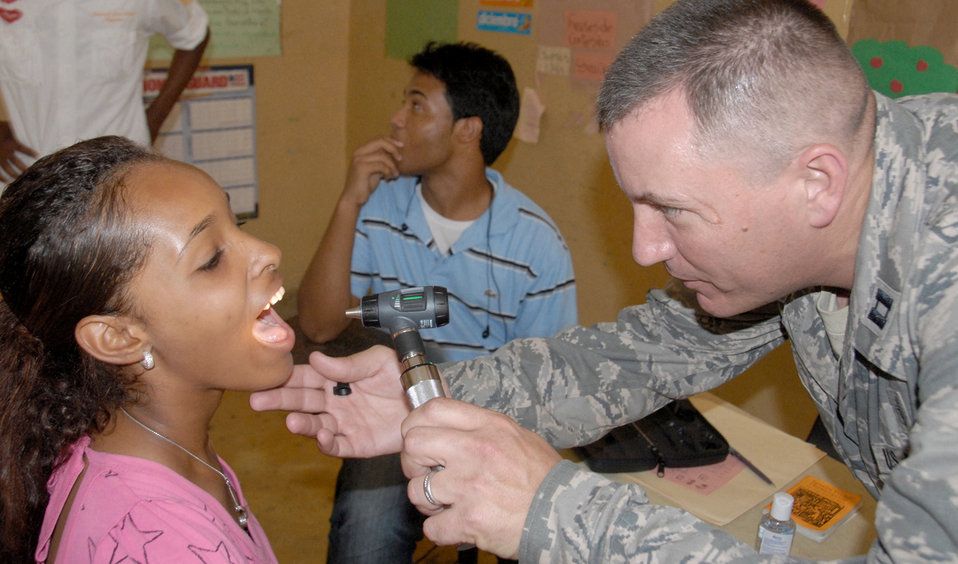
Team provides medical care in Dominican Republic

Capt. Craig Romero checks a Dominican patient during a medical readiness exercise May 24, 2010, in the Dominican Republic. A team of 39 medical specialists from Air Force Reserve Command is providing medical care to four towns in the Puerto Plata region of the country. Captain Romero is a physician's assistant with the 927th Aeromedical Staging Squadron, MacDill Air Force Base, Fla.